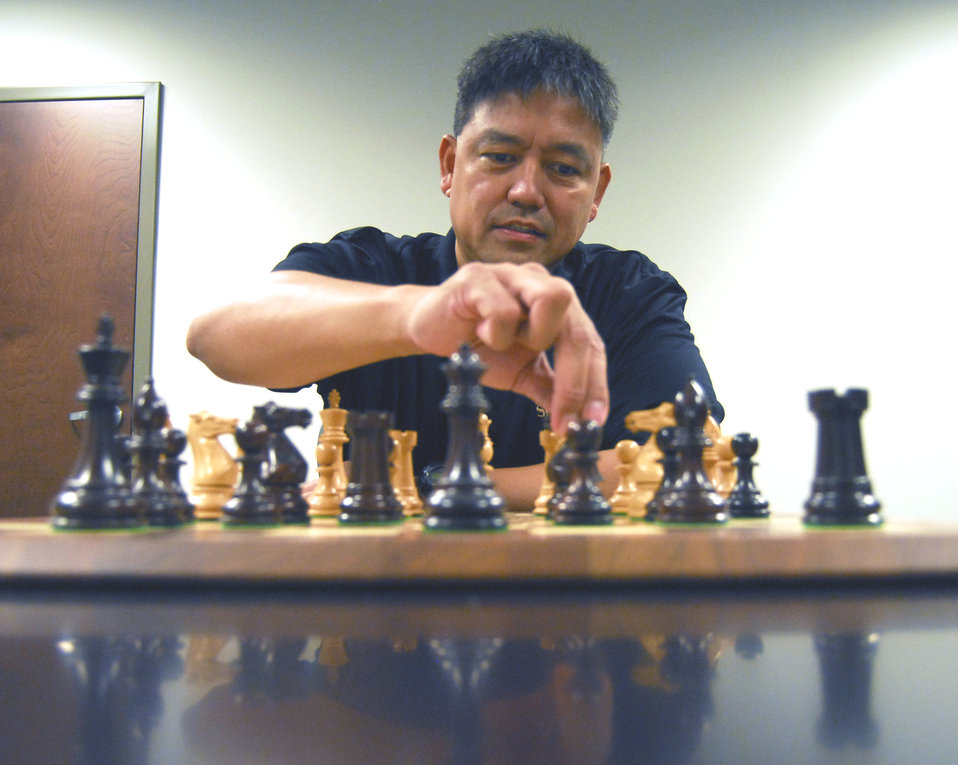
Pope senior NCO wins interservice chess tourney

Master Sgt. Dan Ranario defeated top chess players from each service during the 2010 Interservice Chess Championship. He will represent the U.S. in the 2010 NATO Chess Championship in Koege, Denmark. Sergeant Ranario is assigned to the 3rd Aerial Port Squadron at Pope Air Force Base, N.C.